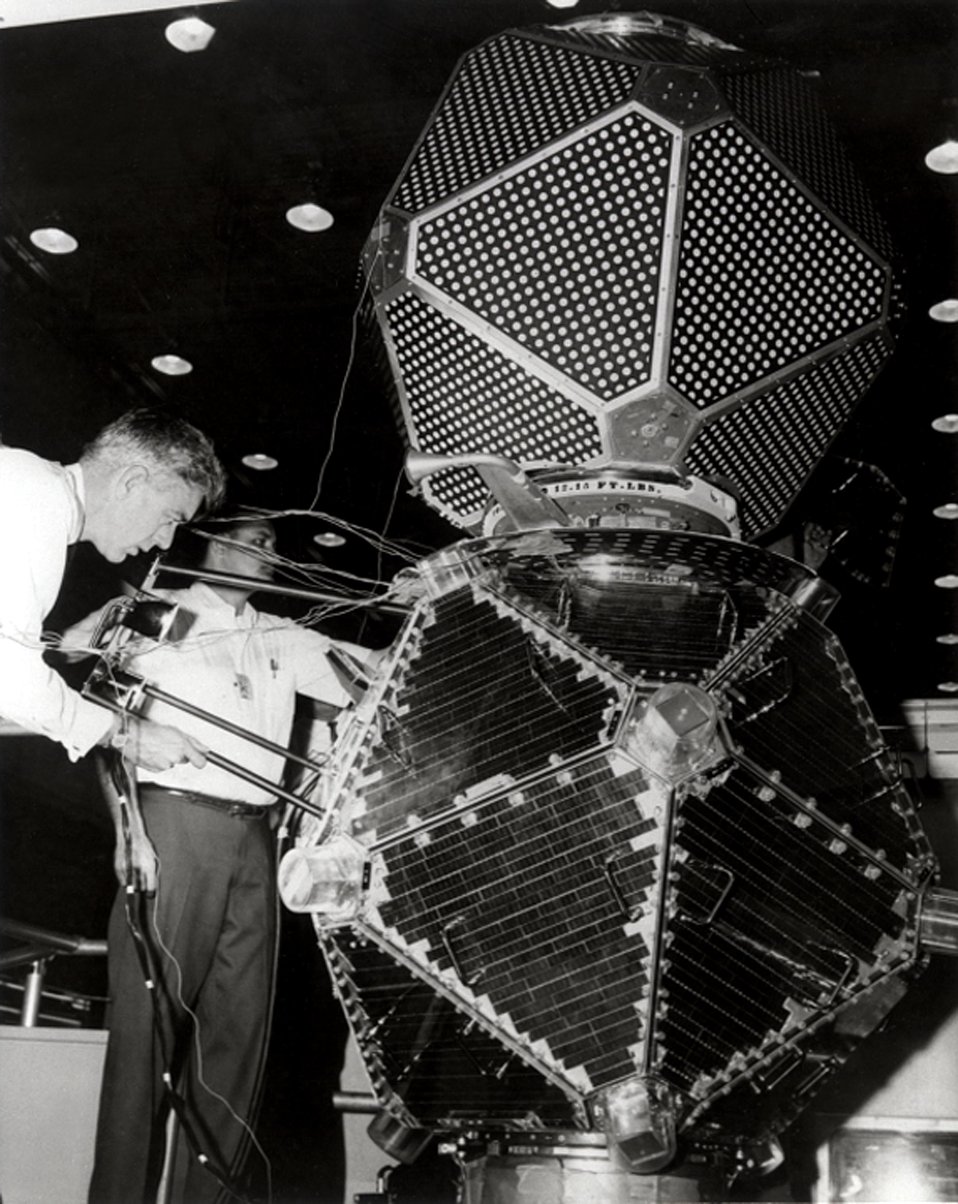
Stress and strains are being measured on the lower space craft after being loaded with a duplicate vehicle and the spin-up interstage between the two units.